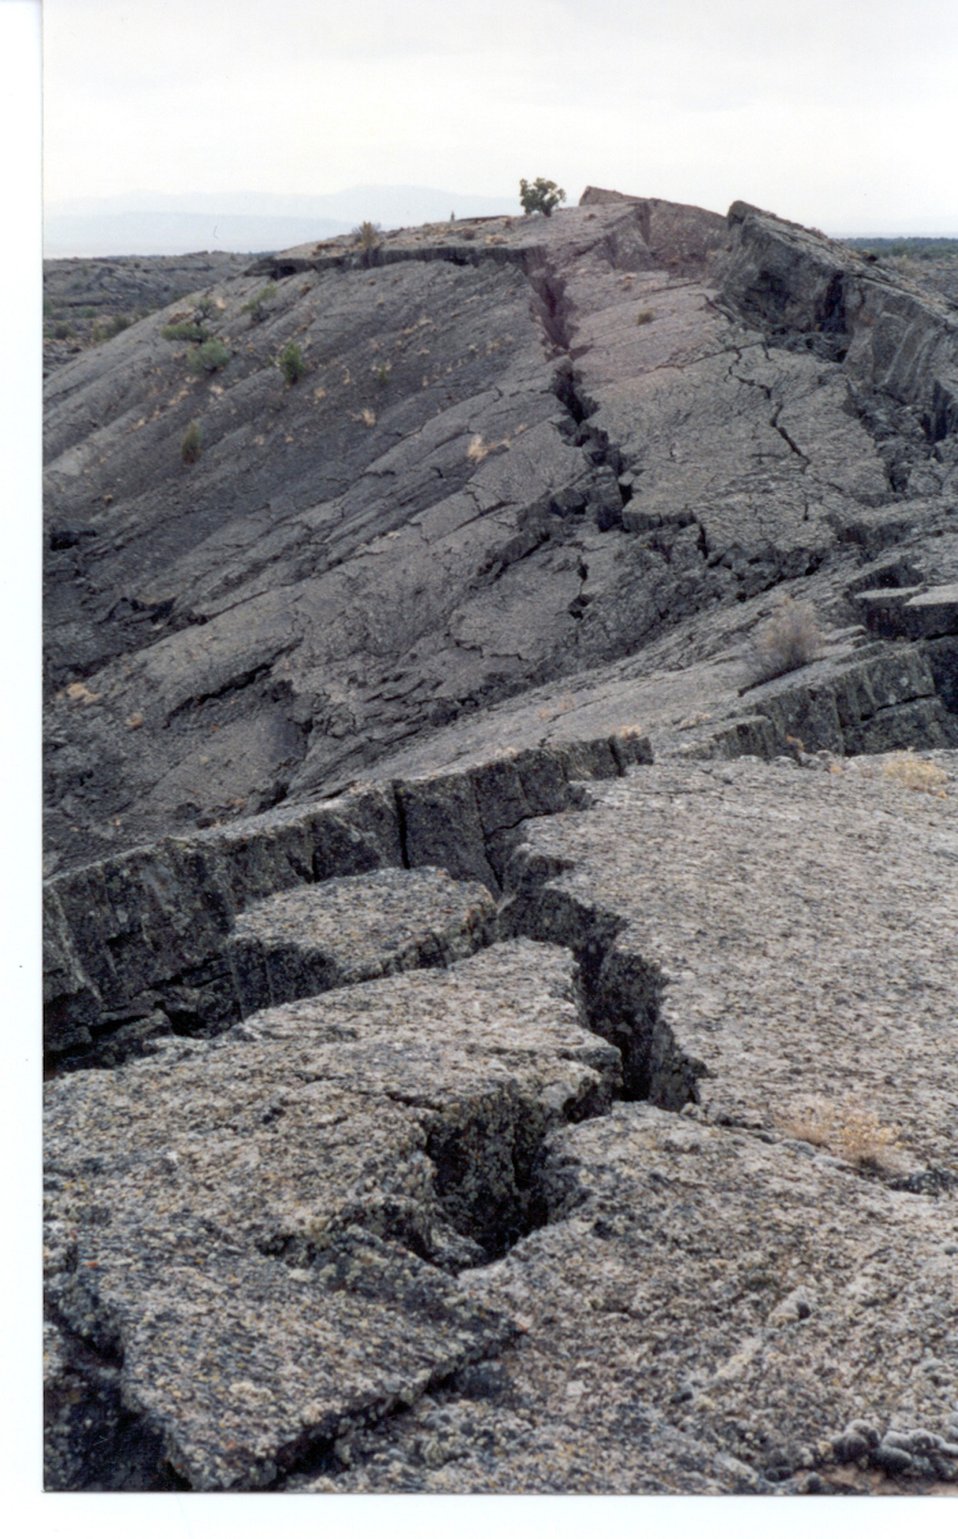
Pressure Ridge and Wapi Flow Craters of the Moon Shoshone Field Office USRD Upper Snake River District